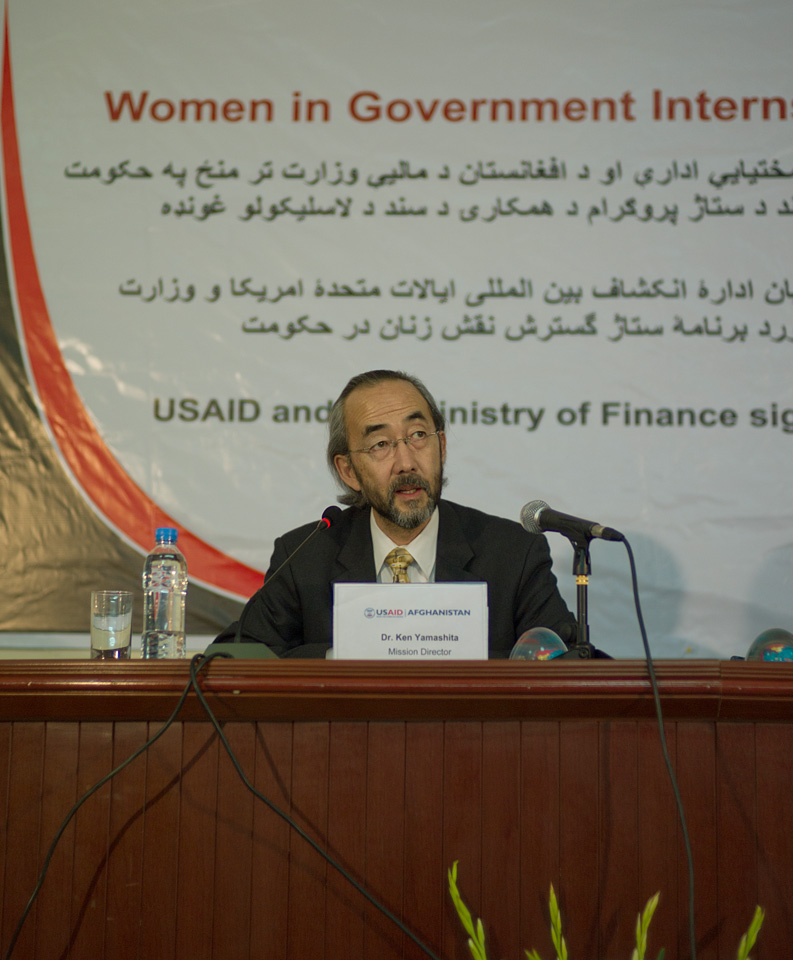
Image 3 3:18:12